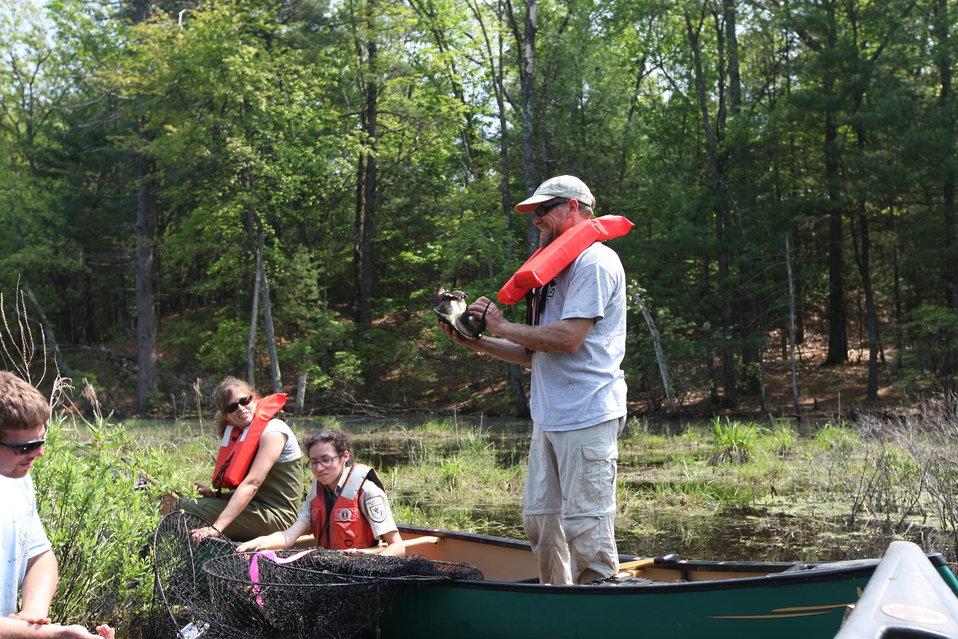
Releasing Turtles

Blanding's turtle release, Assabet River, MA.